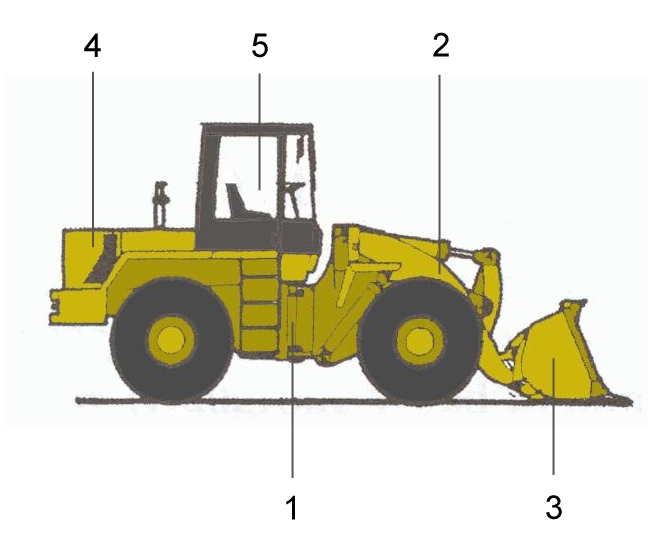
Deutsch: Schematische Darstellung eines Radladers: 1. Knickgelenk 2. Hubrahmen mit Z-Kinematik 3. Anbaugerät vorne (Ladeschaufel) 4. Motor 5. Fahrerkabine